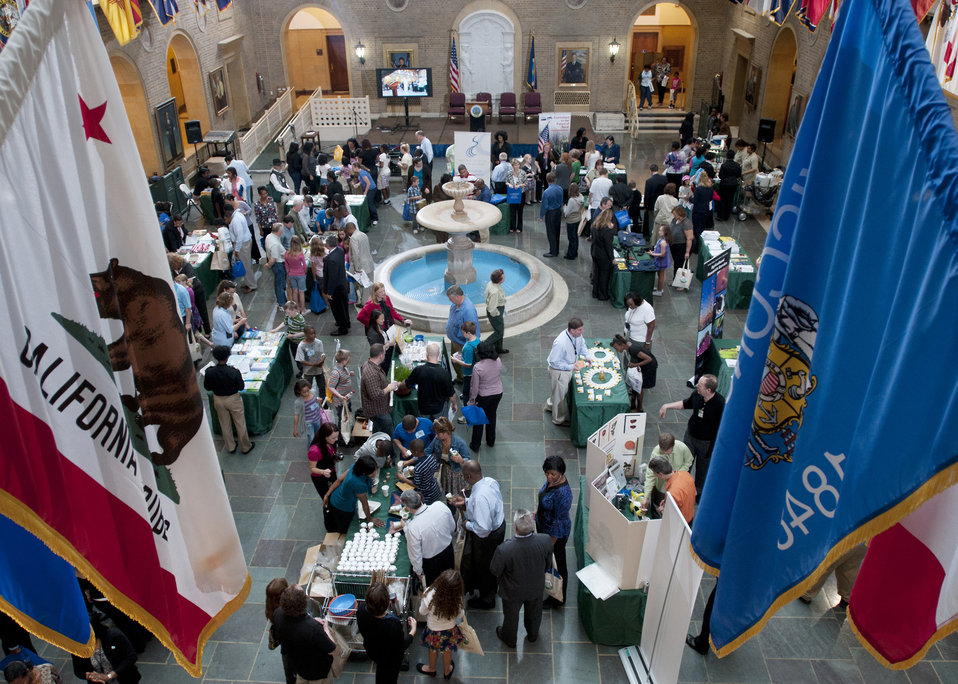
The U. S. Department of Agriculture (USDA) held its annual “Take Your Child to Work Day” on the patio of the Whitten Building, in Washington, DC, on Thursday, Apr. 28, 2011. The program is designed to introduce young people to USDA’s wide range of responsibilities and services.